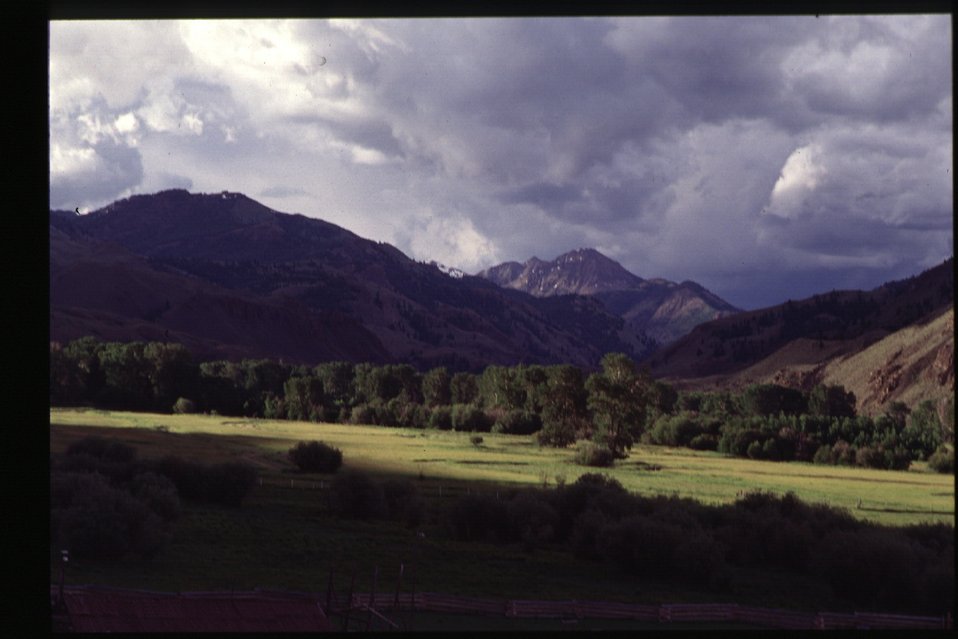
Scenics Salmon Field Office UCSC Upper Columbia Salmon Clearwater District